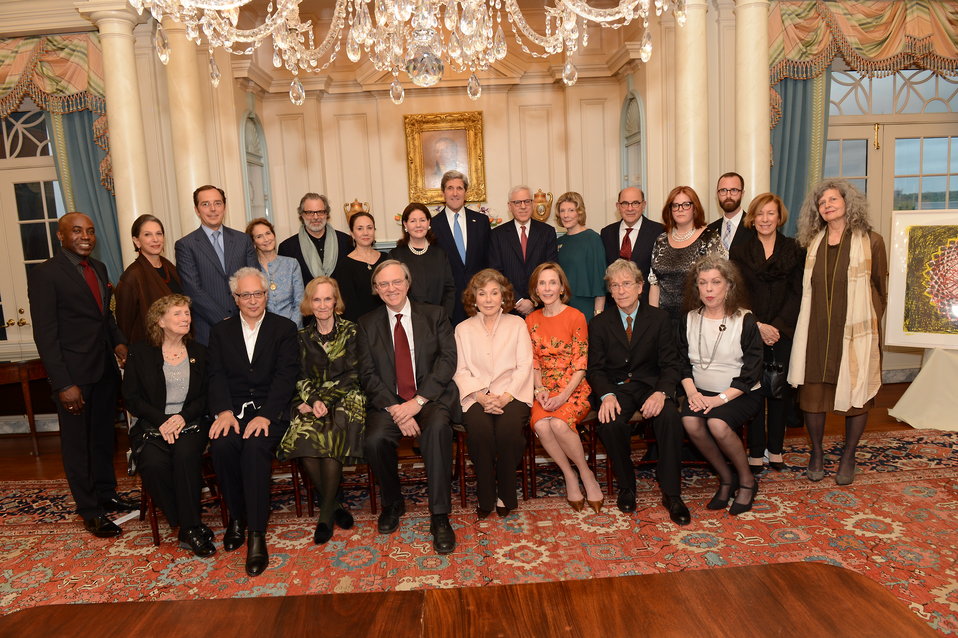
Secretary Kerry at the Annual Foundation for Arts and Preservation in Embassies Dinner

U.S. Secretary of State John Kerry poses for a photo at the Annual Foundation for Arts and Preservation in Embassies (FAPE) dinner at the U.S. Department of State in Washington, D.C., on April 29, 2013.